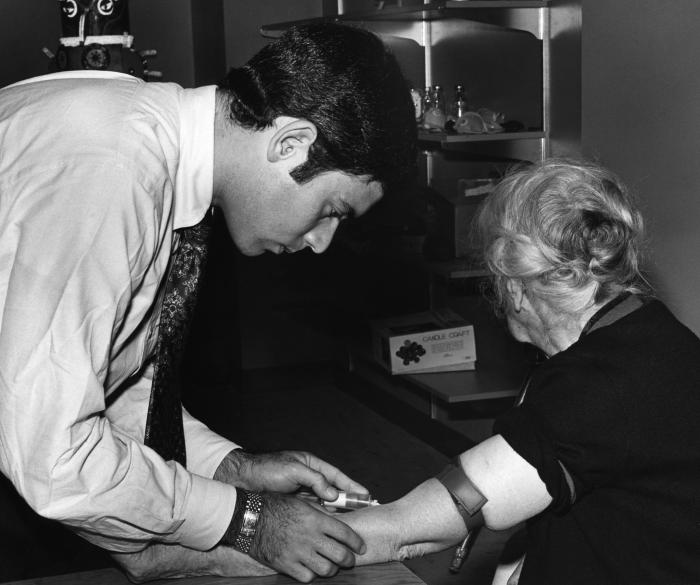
This 1976 photograph showed a public health professional drawing blood from an elderly woman, which would be tested during the nationwide swine flu vaccination campaign, begun on October 1, 1976.